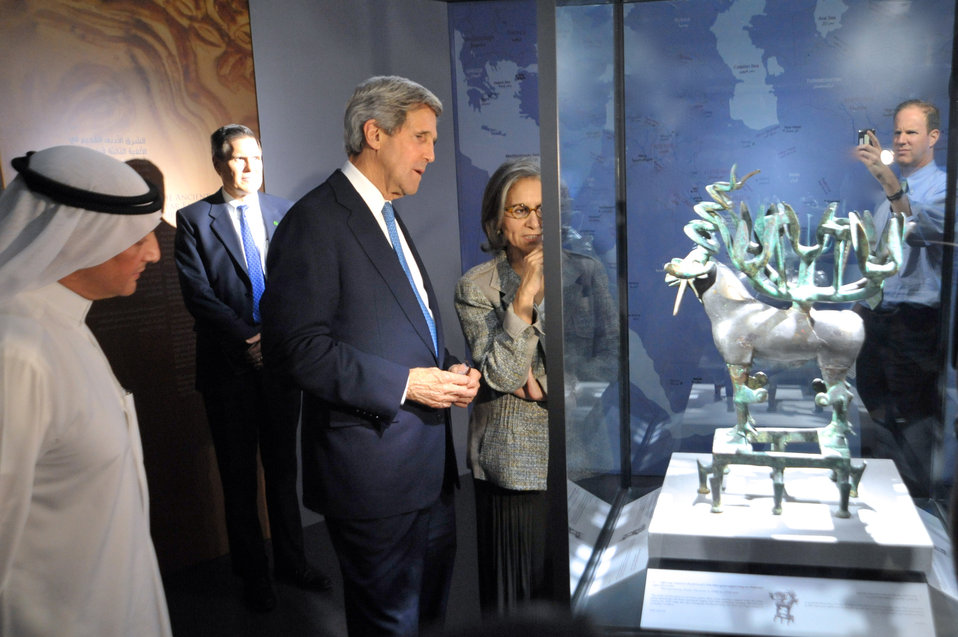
Secretary Kerry Tours an Islamic Cultural Center

U.S. Secretary of State John Kerry admires a sculpture during a tour of the Dar al-Athar Islamic Cultural Center with Sheika Hussah Sabah Al-Salem Al-Sabah in Kuwait City, Kuwait, on June 26, 2013.